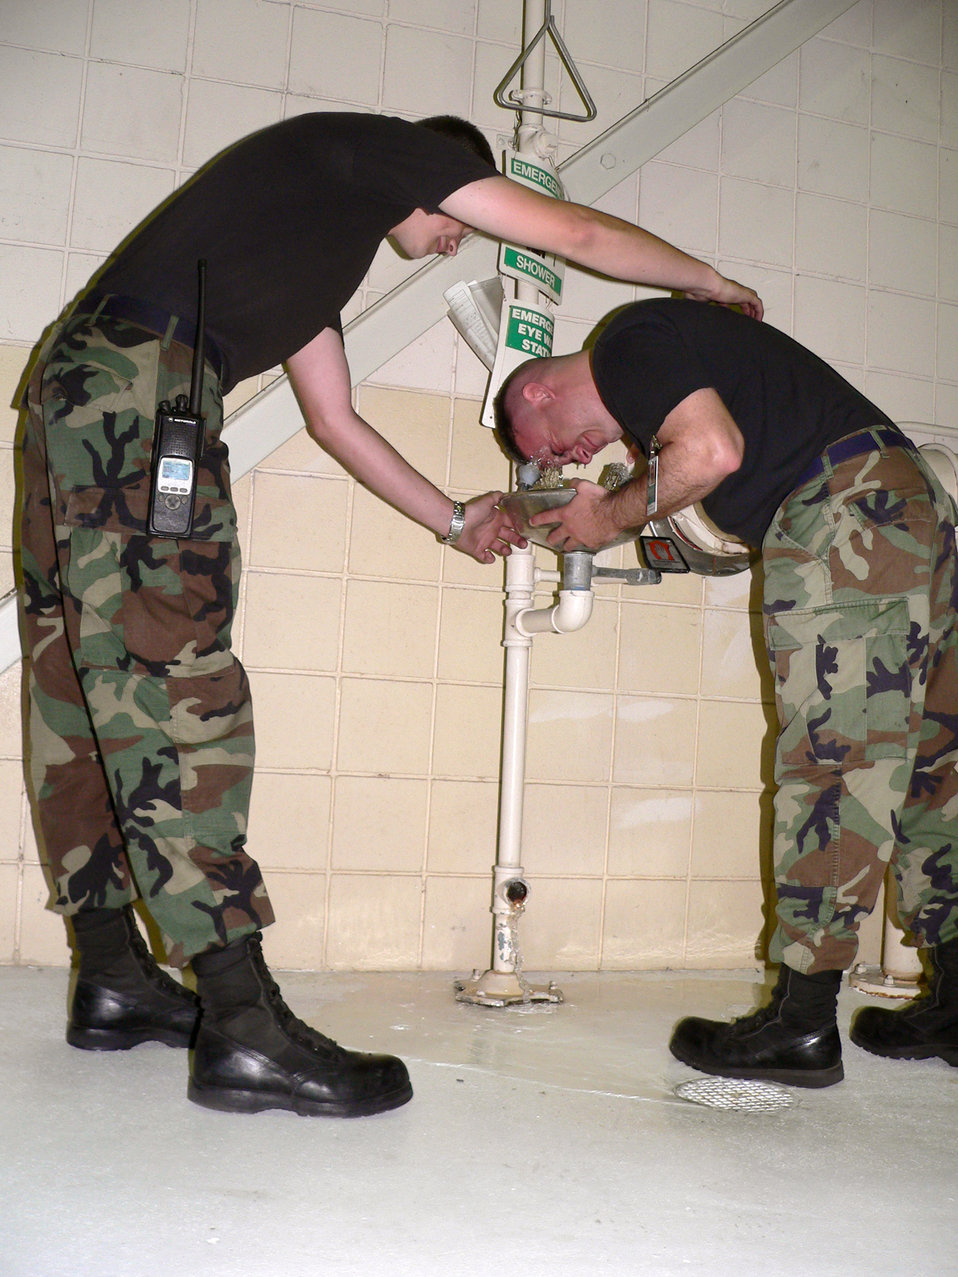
Moody prepares for hurricane season

Staff Sgt. Zac Schneider (left) helps Tech. Sgt. Kevin Deiser rinse his eyes following a mock contamination event as part of a hurricane evacuation exercise at Moody Air Force Base, Ga., on Wednesday, May 17. Sergeant Schneider is from the 347th Maintenance Squadron and Sergeant Deiser is with the 347th Maintenance Group.